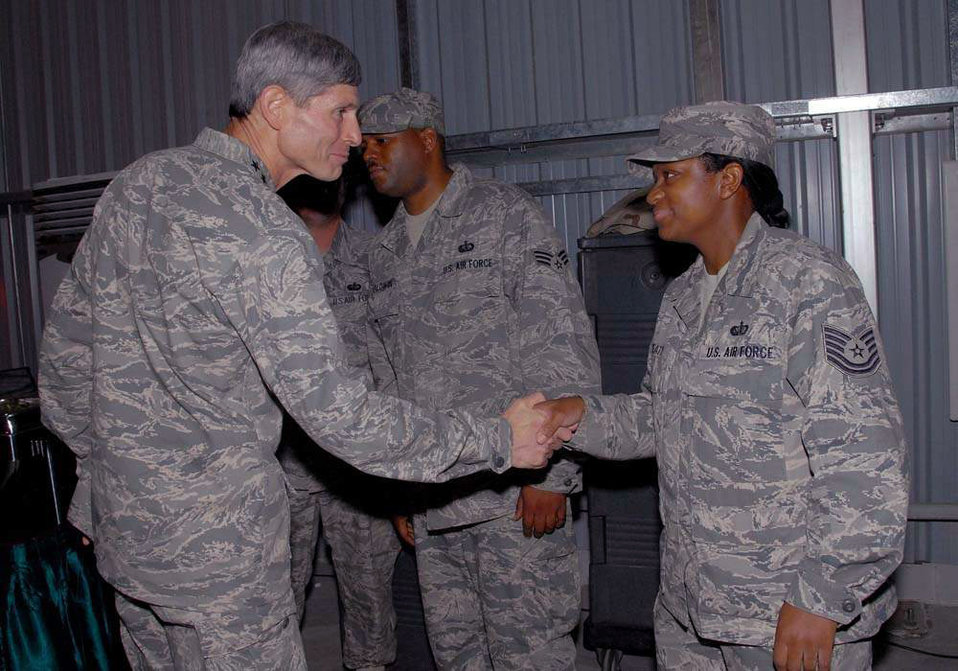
Top military leaders visit Airmen in Southwest Asia

Gen. Norton A. Schwartz thanks Tech. Sgt. Toni Beaty after a senior leader dinner Oct. 22 at an air base in Southwest Asia. General Schwartz is the chief of staff of the Air Force, and Sergeant Beaty is a dining facility manager for the 380th Expeditionary Services Squadron.